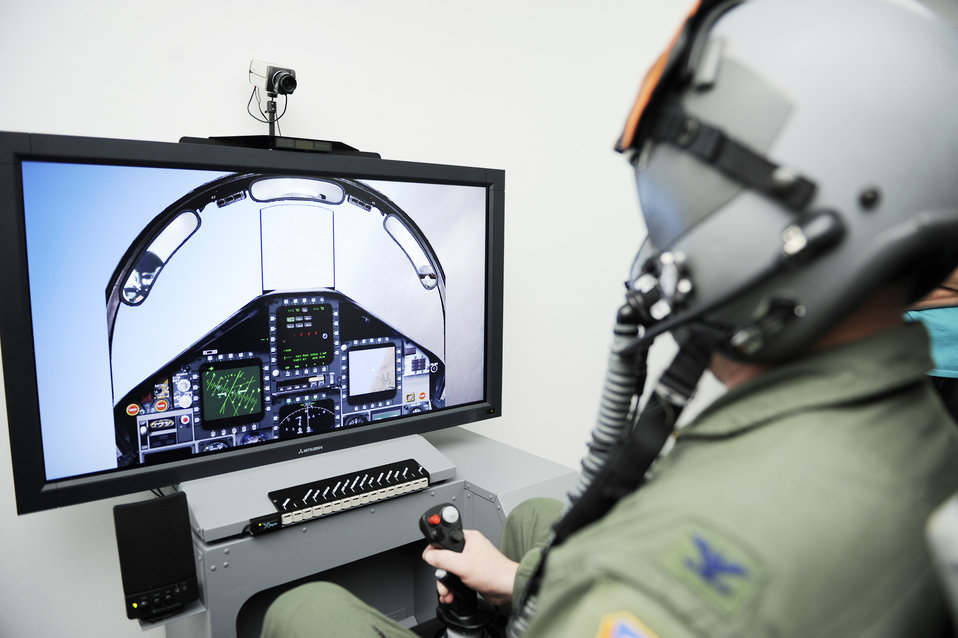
Mountain Home AFB receives hypoxia simulator

Col. James McGovern, 366th Operations Group commander, tests the simulator-based hypoxia demonstrator for fighter aircrew Dec. 16, 2009 at Mountain Home Air Force Base, Idaho. Hypoxia is an oxygen deficiency of the tissue and blood cells that causes impairment at high altitudes.